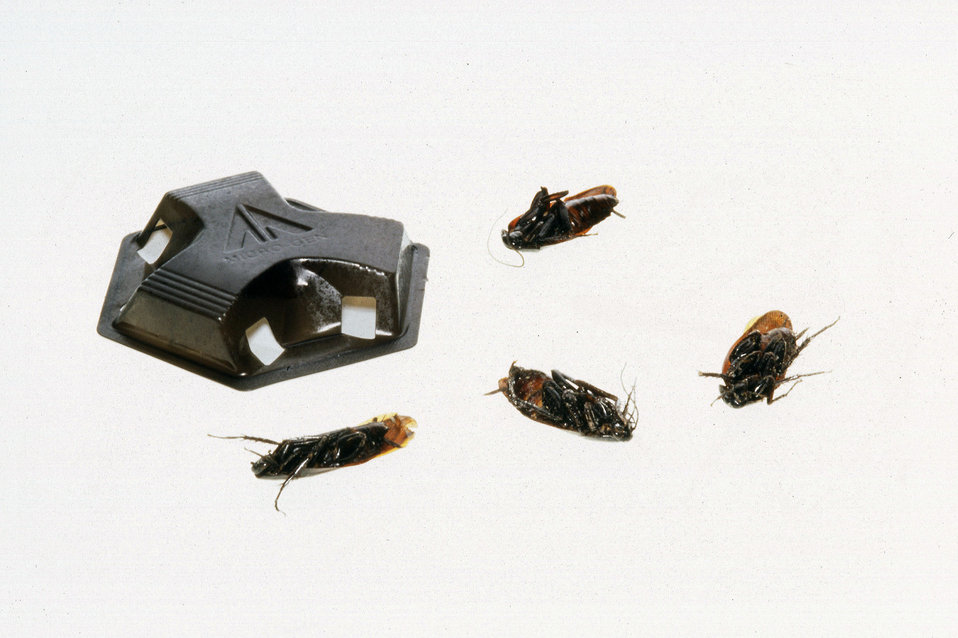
U.S. Department of Agriculture’s (USDA) Agricultural Research Service (ARS) scientists discovered and patented new roach bait called flurosulfonates. These compounds work to control cockroaches, ants, and termites-insects that live in groups or colonies. The chemicals work especially well because insects carry the insecticide back to their nests to share with cronies.